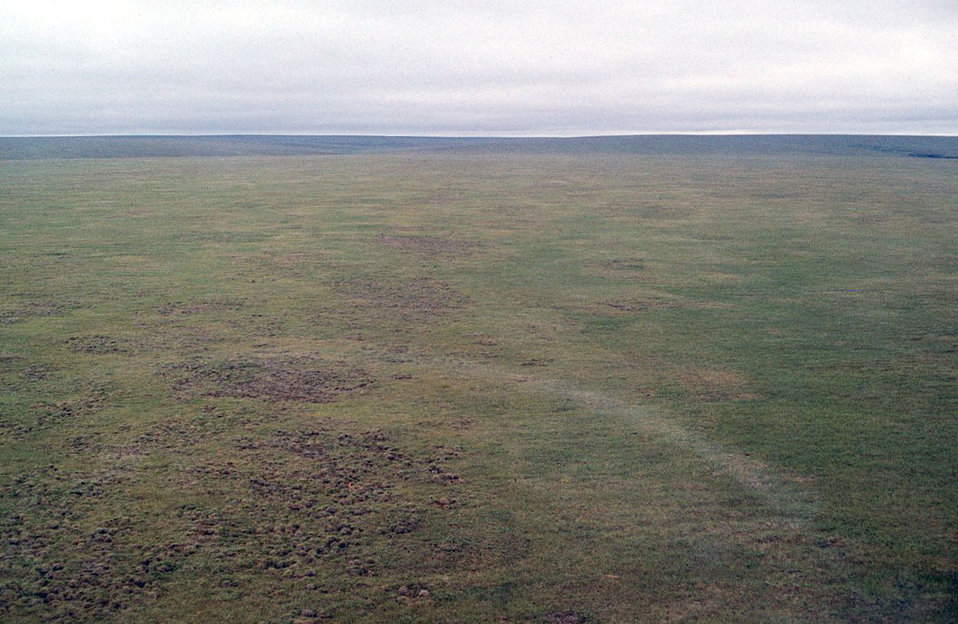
1002 Area: Tundra

Alaska National Wildlife Refuge